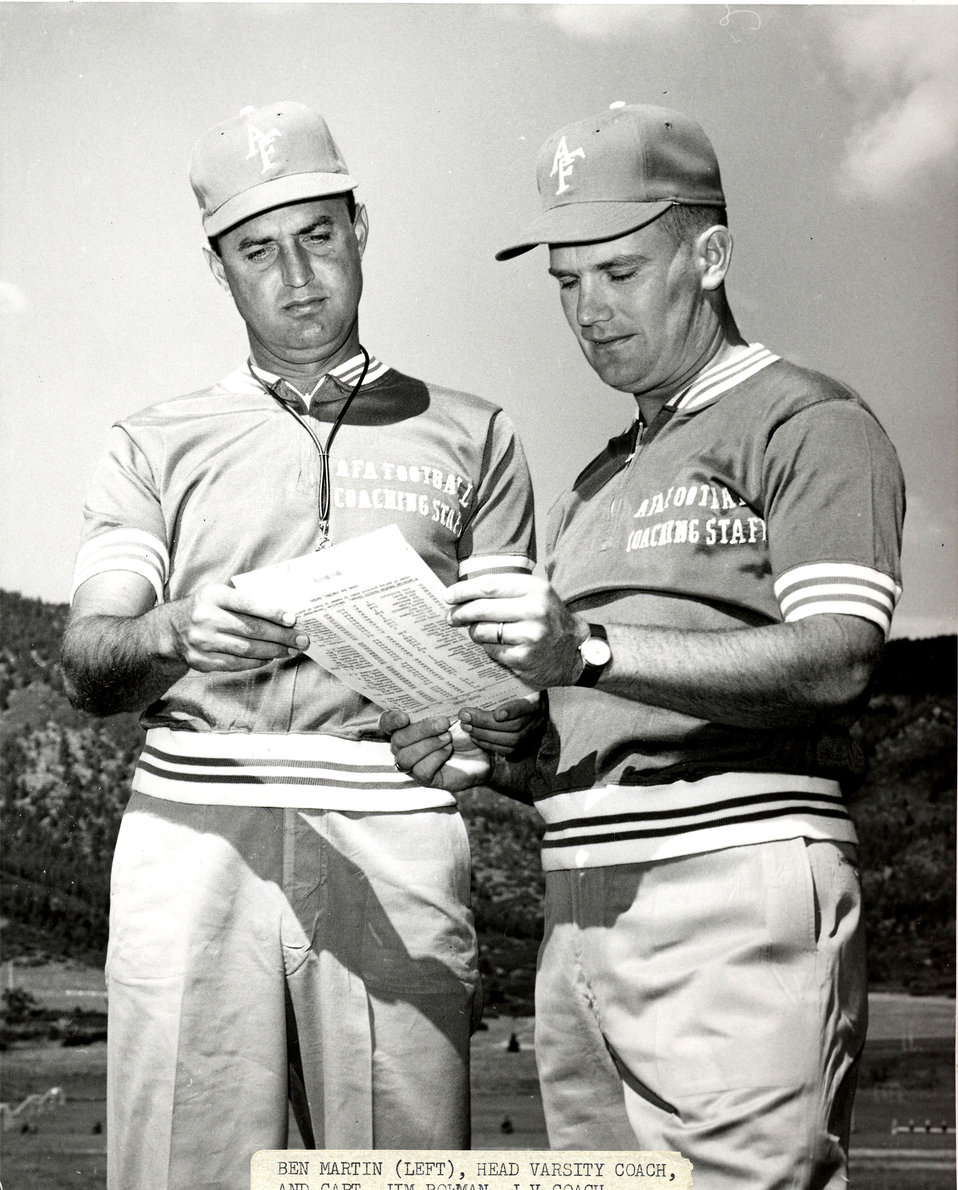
Air superiority: 48 years of Falcon football

U.S. AIR FORCE ACADEMY, Colo. -- Falcon head coach Ben Martin (left) and Jim Bowman check the roster sheet in this 1961 photo. Mr. Bowman has been with the academy for 48 years.